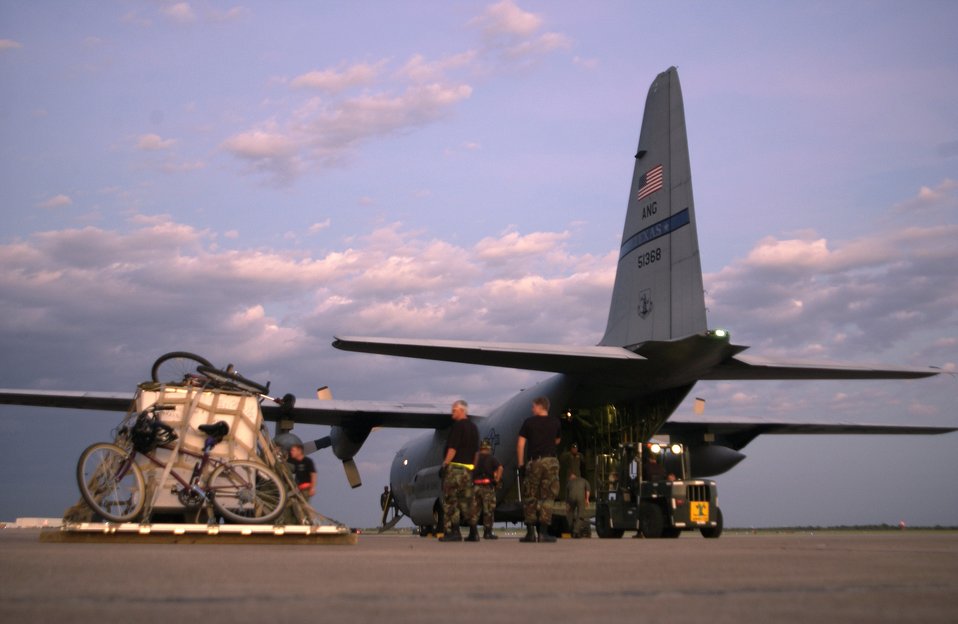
Day's done

ELLINGTON FIELD, Texas - Air Force crews off load equipment from a C-130 Hercules aircraft here while clouds, remnants of Hurricane Rita, drift away during relief operations Sept. 24. The aircraft and crew are from the Texas Air National Guard's 136th Airlift Wing at Naval Air Station-Joint Reserve Base Fort Worth, Texas.